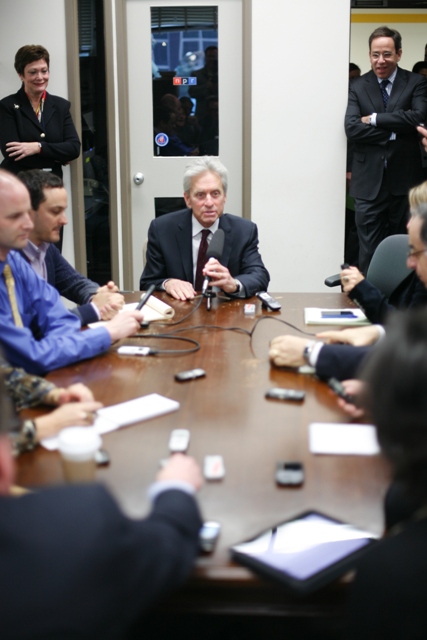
Actor Michael Douglas Is Interviewed By Members of State Department Press Corps

Actor Michael Douglas is interviewed by members of the U.S. Department of State's press corps during his visit to the U.S. Department of State in Washington, D.C., on November 3, 2011. Deputy Secretary of State Thomas Nides is pictured standing to the right, and Under Secretary of State for Arms Control and International Security Ellen Tauscher is pictured standing to the left.